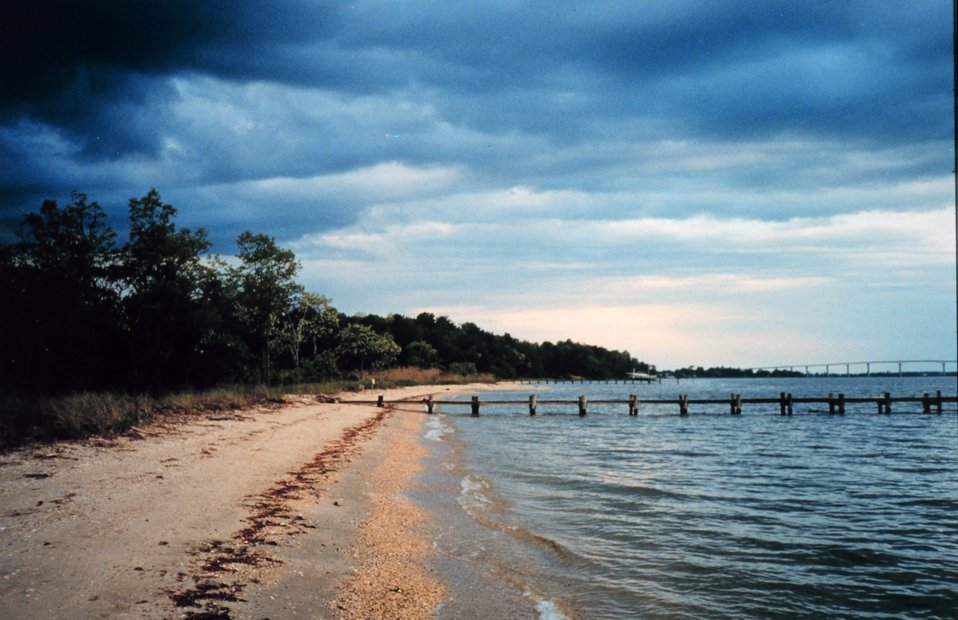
A spring storm brewing near the mouth of the Patuxent River